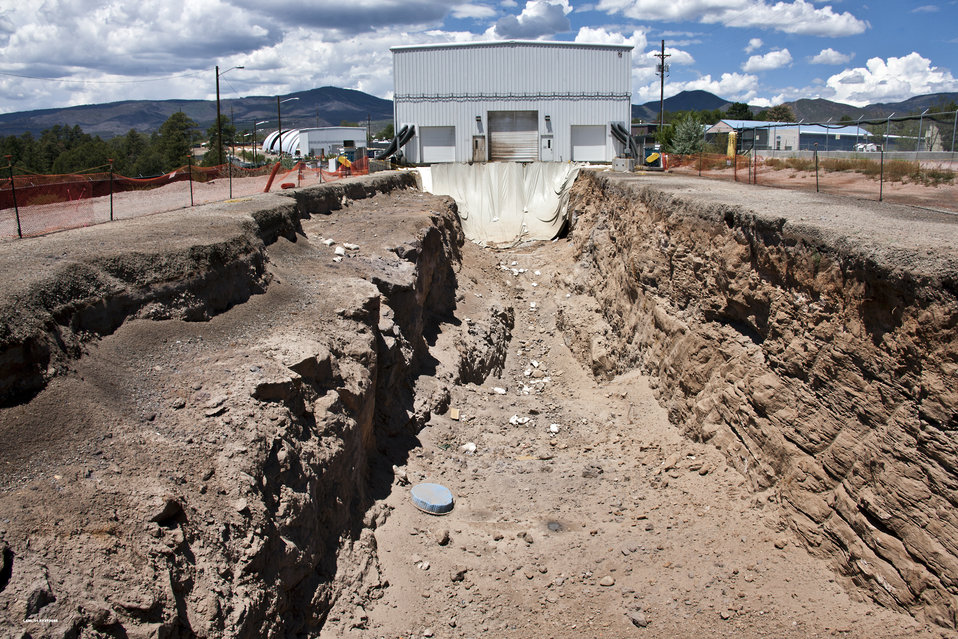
Los Alamos excavated trench

An excavated trench behind one of the moveable protective enclosures at Material Disposal Area B.